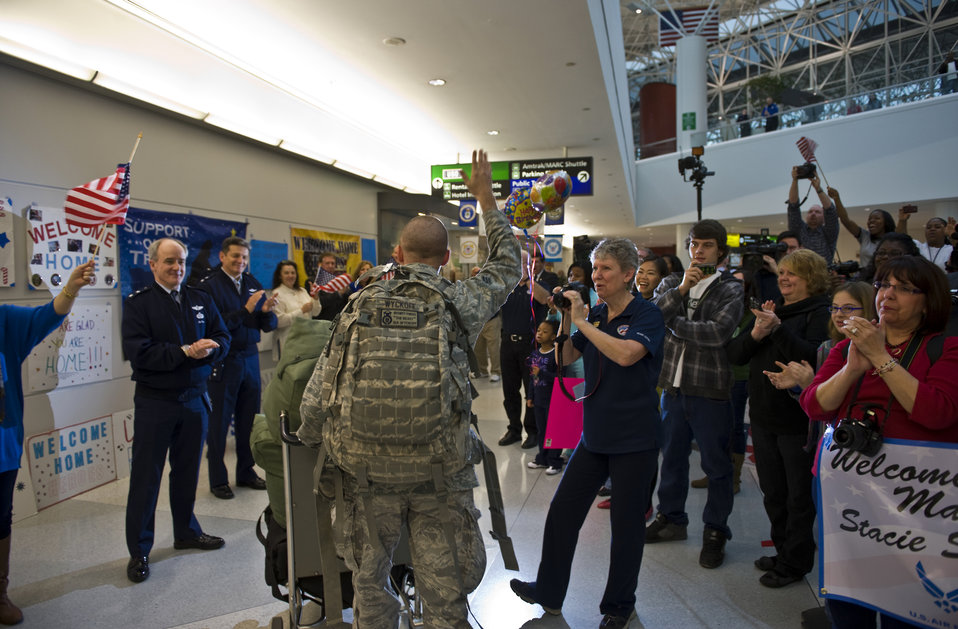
Last Airmen in Iraq return

Senior Airman Nathan Wyckoff is greeted by Air Force leaders and community members as he enters the lobby Dec. 20, 2011, at Baltimore/Washington International Thurgood Marshall Airport in Baltimore, Md. Wyckoff was one of the last Airmen to return from Iraq in support of the completed Operation New Dawn. Wyckoff is a patrolman assigned to the 30th Security Forces Squadron at Vandenberg Air Force Base, Calif.